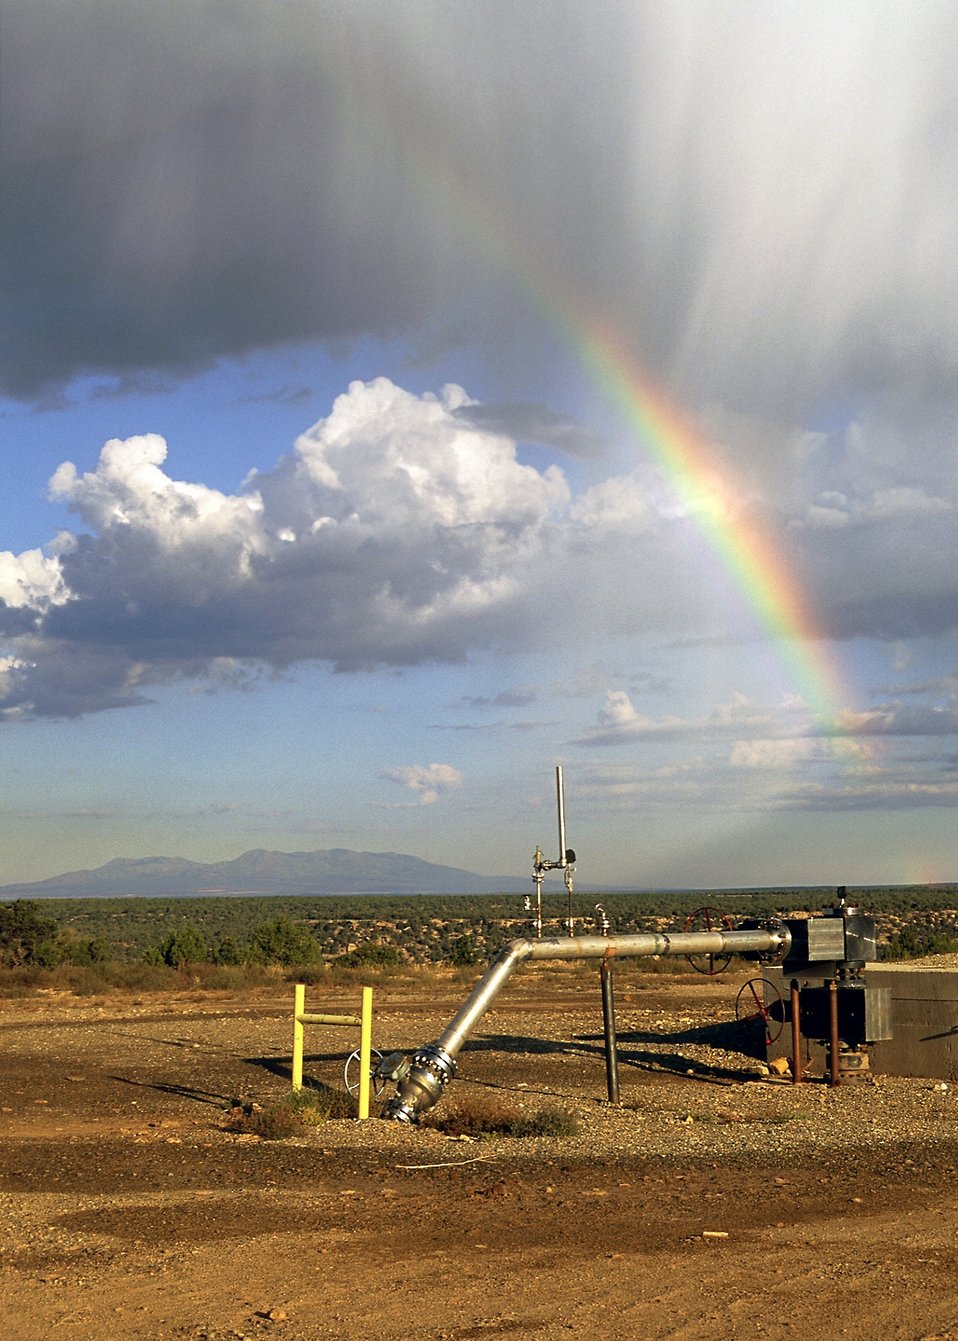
Rainbow Over Center